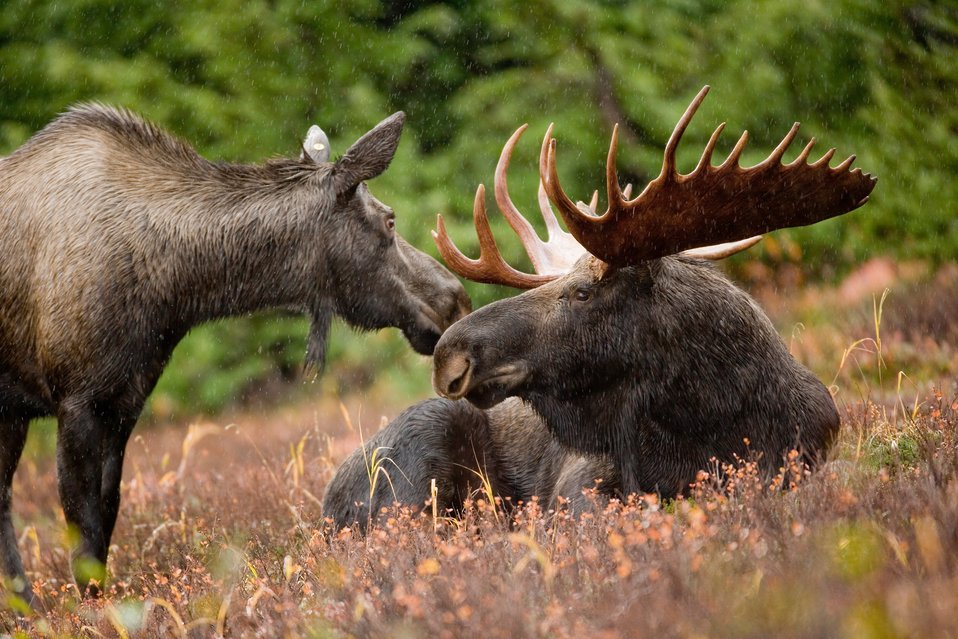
Alaskan moose pair

September 2007